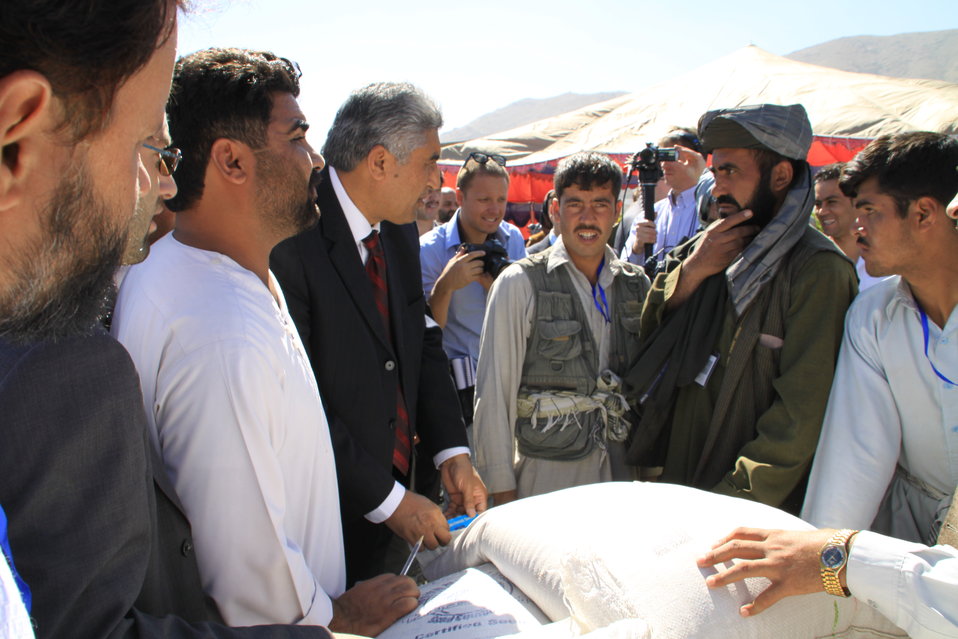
AVIPA Plus Wheat Seed Distribution 101005

US Ambassador Karl Eikenberry and USAID Acting Mission Director Kevin Brownawell joined the Minister of Agriculture, Irrigation and Livestock, H.E. Minister Mohammed Rahimi in signing a Memorandum of Understanding and distributing vouchers to area farmers for wheat and fertilizer.

US Ambassador Karl Eikenberry and USAID Acting Mission Director Kevin Brownawell joined the Minister of Agriculture, Irrigation and Livestock, H.E. Minister Mohammed Rahimi in signing a Memorandum of Understanding and distributing vouchers to area farmers for wheat and fertilizer.